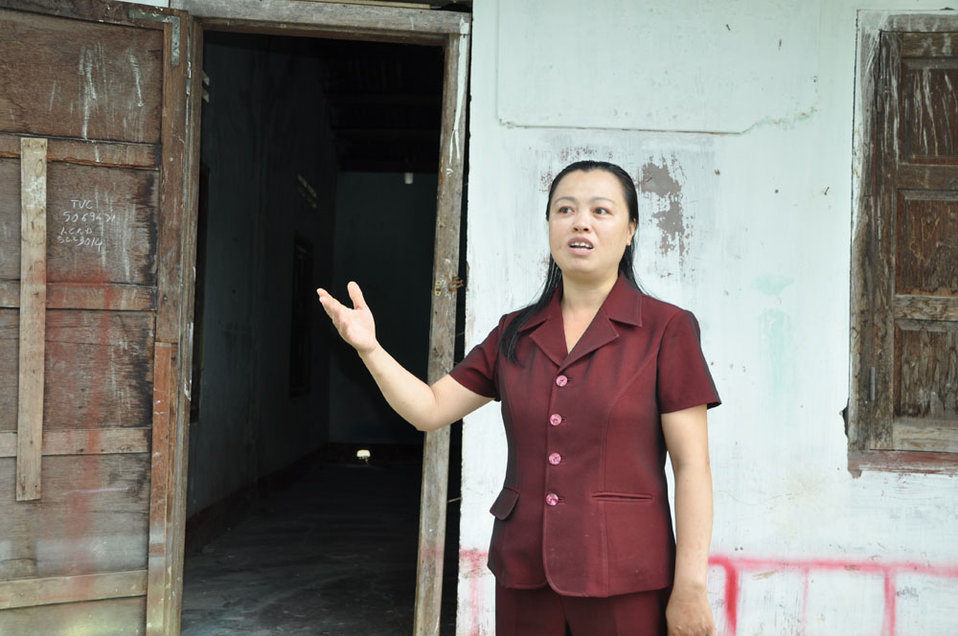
A local official shows the previous rooms where kindergarten classess were held in one commune in Kon Tum Province.